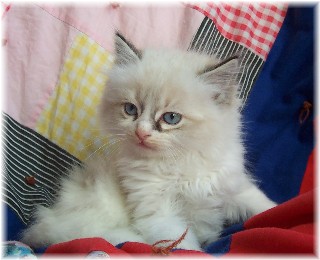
One of our Ragdoll kittens.